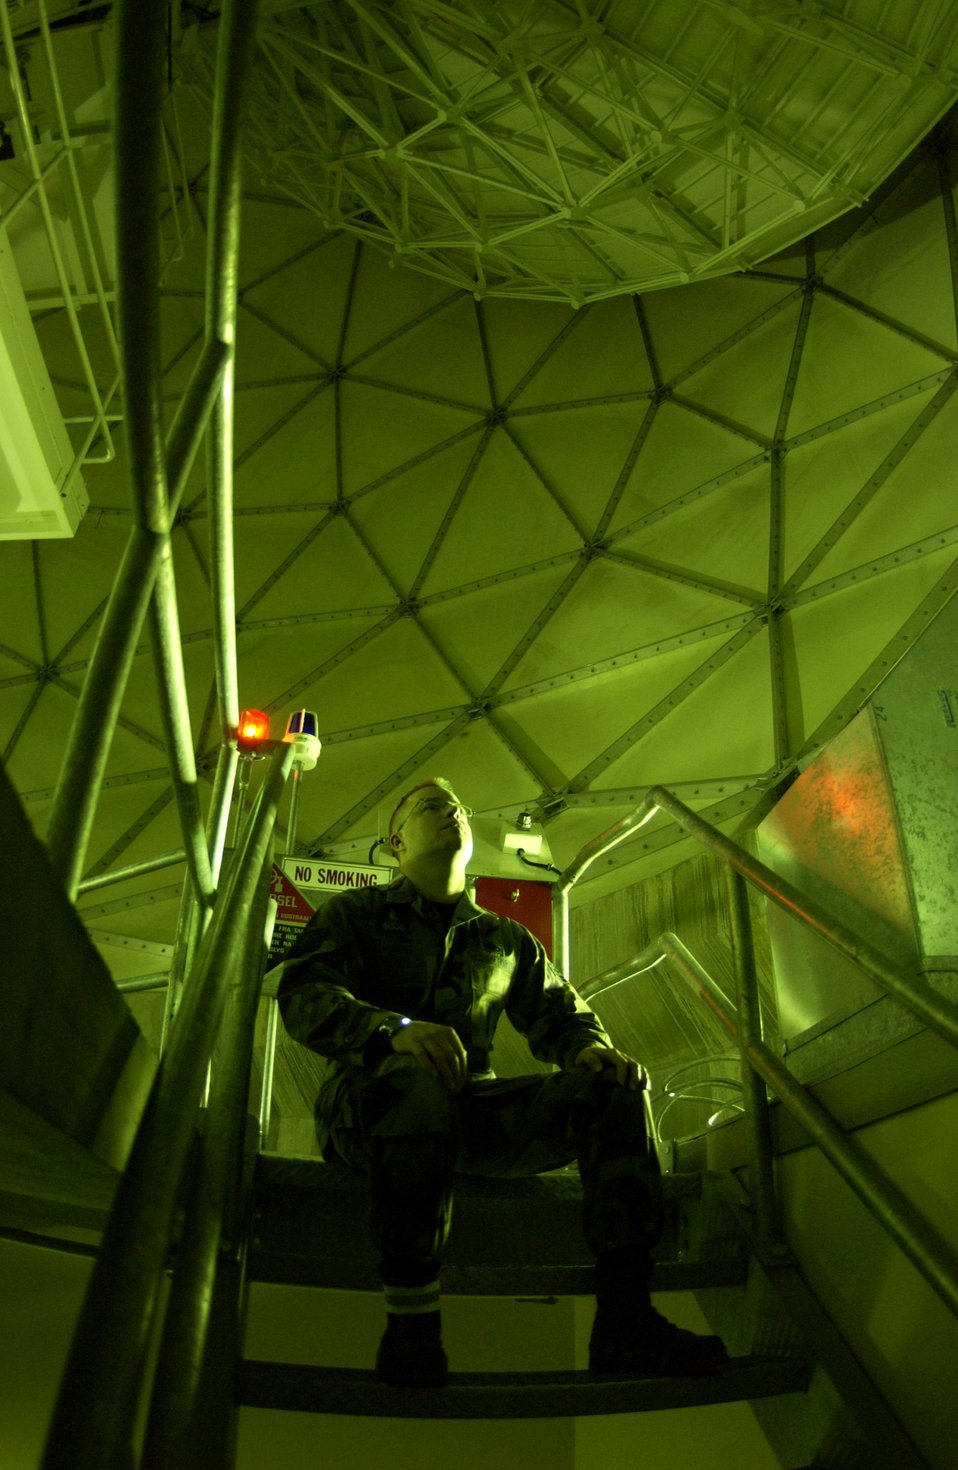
Life at Thule

Tech. Sgt. Bryan Schubert watches a moving satellite dish inside one of the